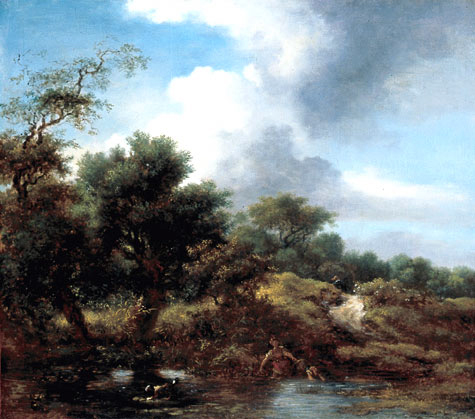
'The Pond', oil on canvas painting by Jean-Honoré Fragonard, c. 1761-65, Kimbell Art Museum